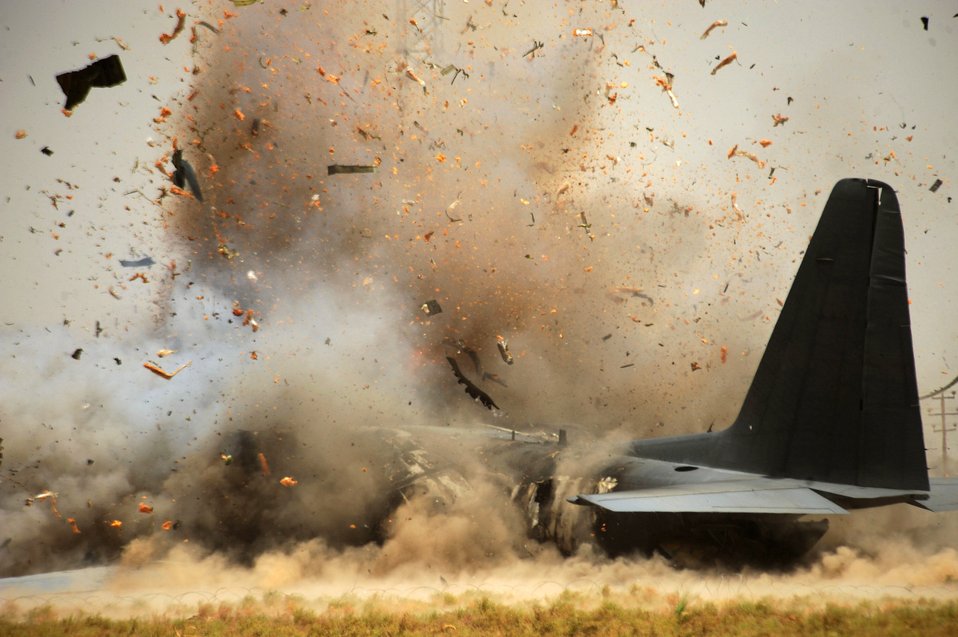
Controlled detonation

Civil engineers at Sather Air Base, Iraq, use controlled detonations July 7 to separate the forward section of a damaged C-130 Hercules so it can be moved. The C-130 made an emergency landing in a field north of Baghdad International Airport shortly after take-off June 27.